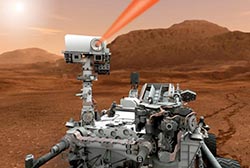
The Curiosity Rover, key to NASA's Mars Science Laboratory mission, bears three systems that Los Alamos National Laboratory helped developed.

The systems LANL helped develop are: ChemCam, ChemMin, and Multi-Mission Radioisotope Theremoelectric Generator Unit.